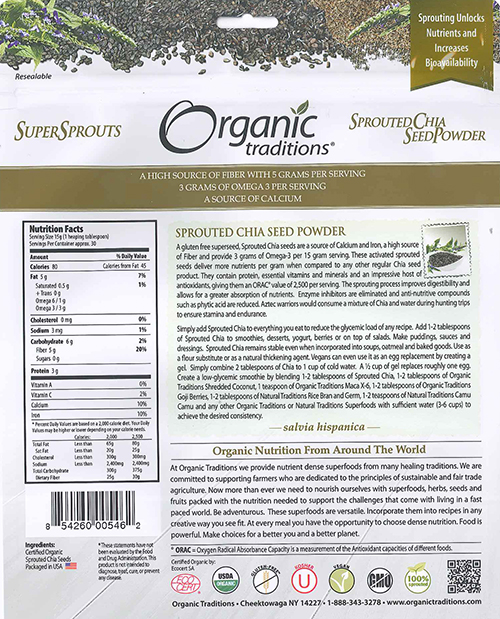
RECALLED – Chia and Flax seed powder

June 4, 2014 – Product Recall – Health Matters America, Inc, Recalls Organic Sprouted Chia Seed Powder and Sprouted Chia/flax Seed Powder Due to Possible Health Risk.